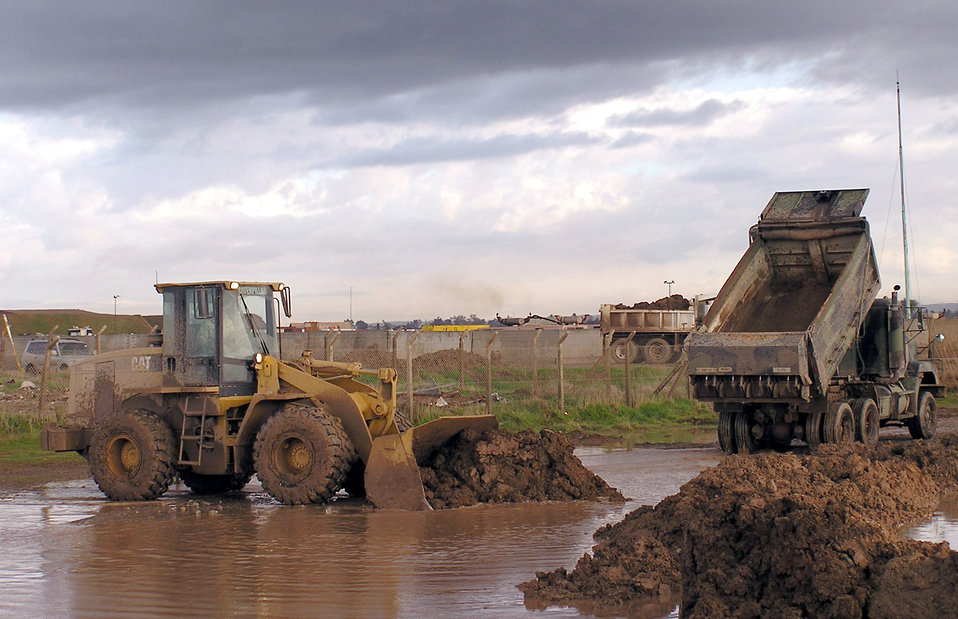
Water world

KIRKUK AIR BASE, Iraq -- Airmen from the 506th Expeditionary Civil Engineer Squadron work to control flooding over a road here Jan. 13. The base was hit by nearly 2 inches of rain overnight leaving many areas of the base, including tents for airmen and soldiers, deluged by water.